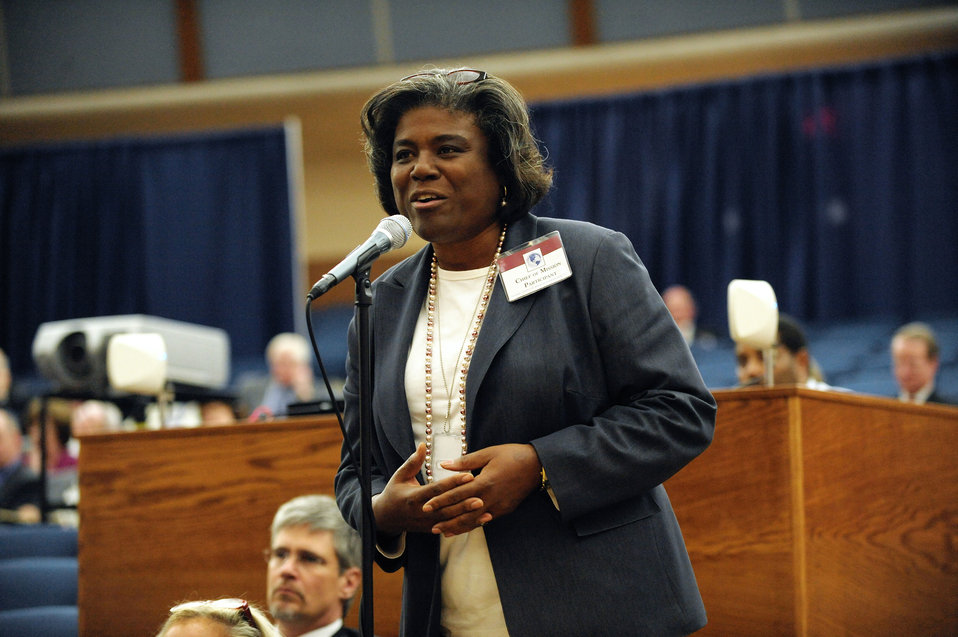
An Ambassador poses a question at the Town Hall during the 2011 Global Chiefs of Mission Conference at the U.S. Department of State in Washington, D.C., on February 3, 2011.